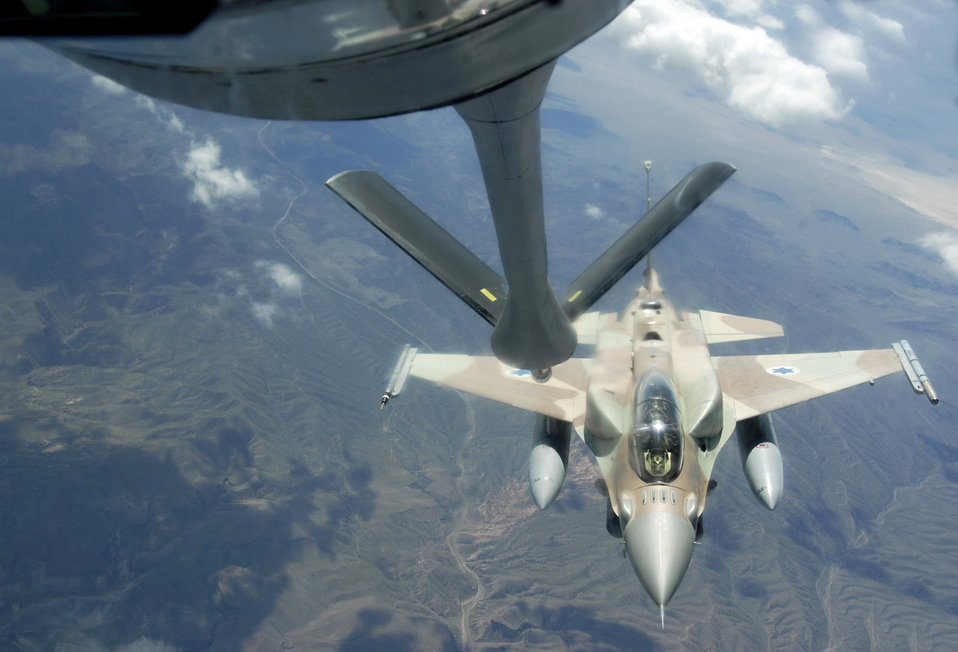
Realistic training with Red Flag

An Israeli air force F-16 from Ramon Air Base, Israel, moves into refueling position July 17 over the Nevada Test and Training Range during Red Flag 09-4. Red Flag began July 13 and ends July 24.